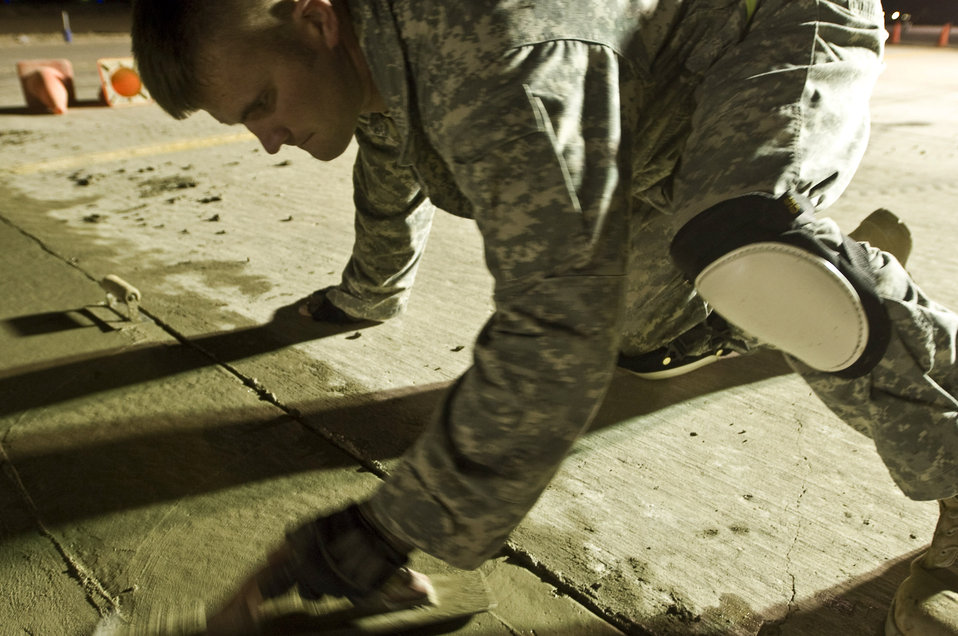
Solid foundation

Senior Airmen Ryan Cassel flattens cement poured on the taxiway to repair cracks and potholes Sept. 22 at Ali Base, Iraq. Extreme heat, along with normal wear and tear, can damage runways, making them unsafe for aircraft. Airman Cassel, a pavements and construction equipment journeyman with the 407th Expeditionary Civil Engineer Squadron, is deployed from Pope Air Force Base, N.C.